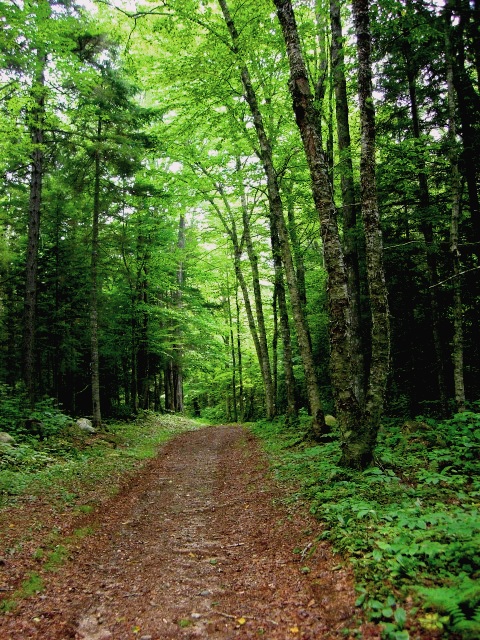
Uploaded by request of Kimmy Curhan.